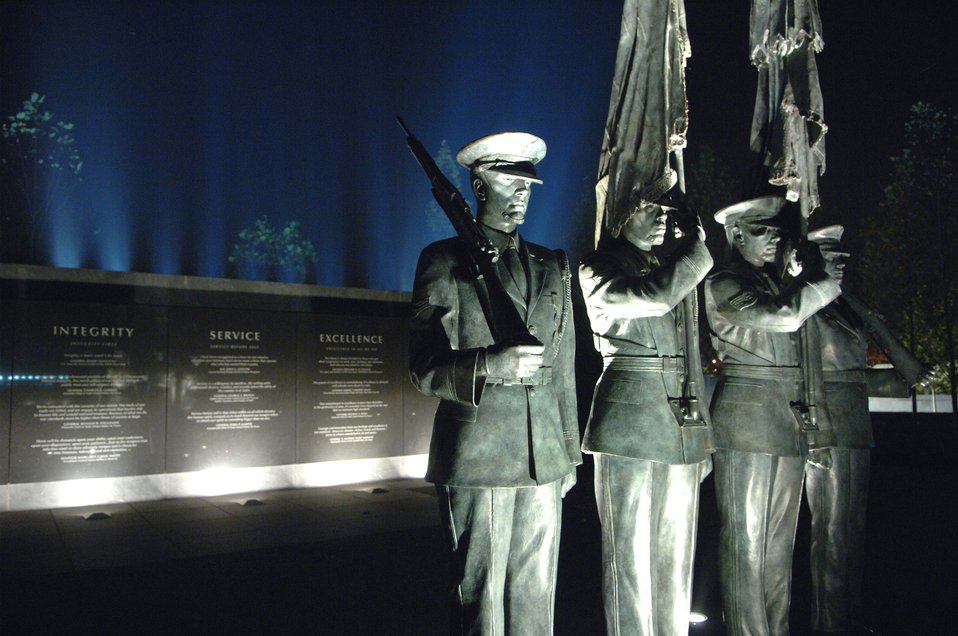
AF Memorial

The Air Force Memorial Honor Guard statue keeps watch at the memorial and represents honor guard members, past and present, who have served their country in that capacity. The Air Force Memorial pays tribute to and honors the patriotic men and women of the U.S. Air Force and its predecessor organizations.